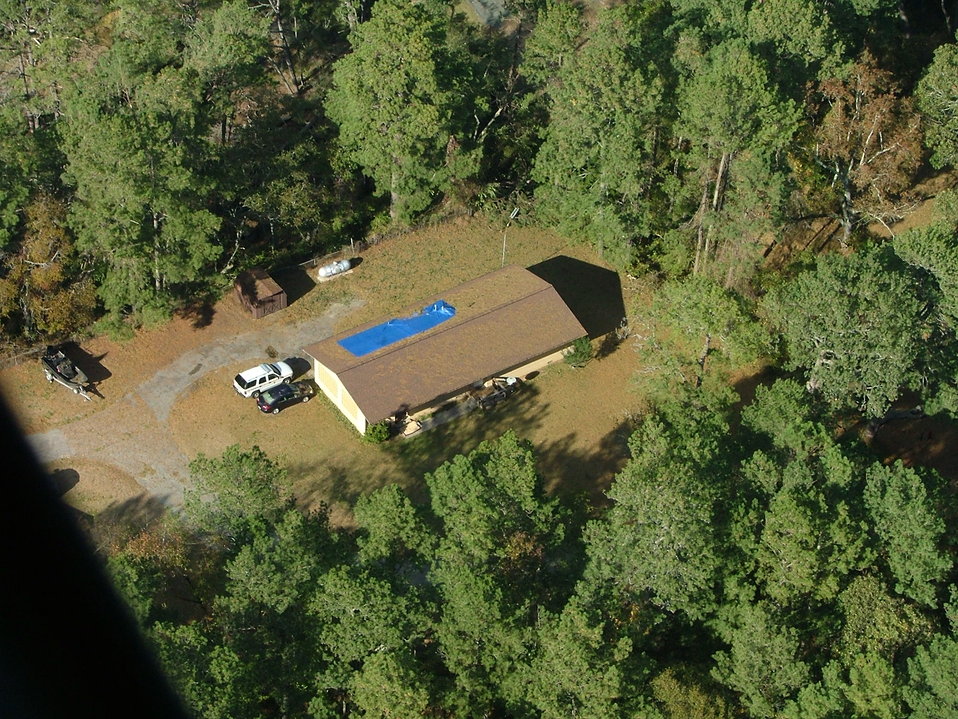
Chincoteague National Wildlife Refuge (VA)

A tarp covers the roof of a refuge building damaged during the storm.